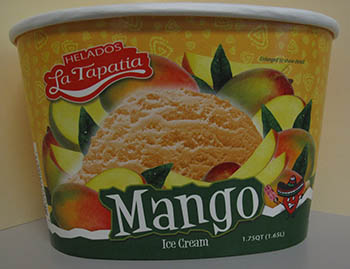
RECALLED – Ice cream products

March 19, 2014 – Product Recall – Helados La Tapatia, Inc. Recalls Products Because of Possible Health Risk.